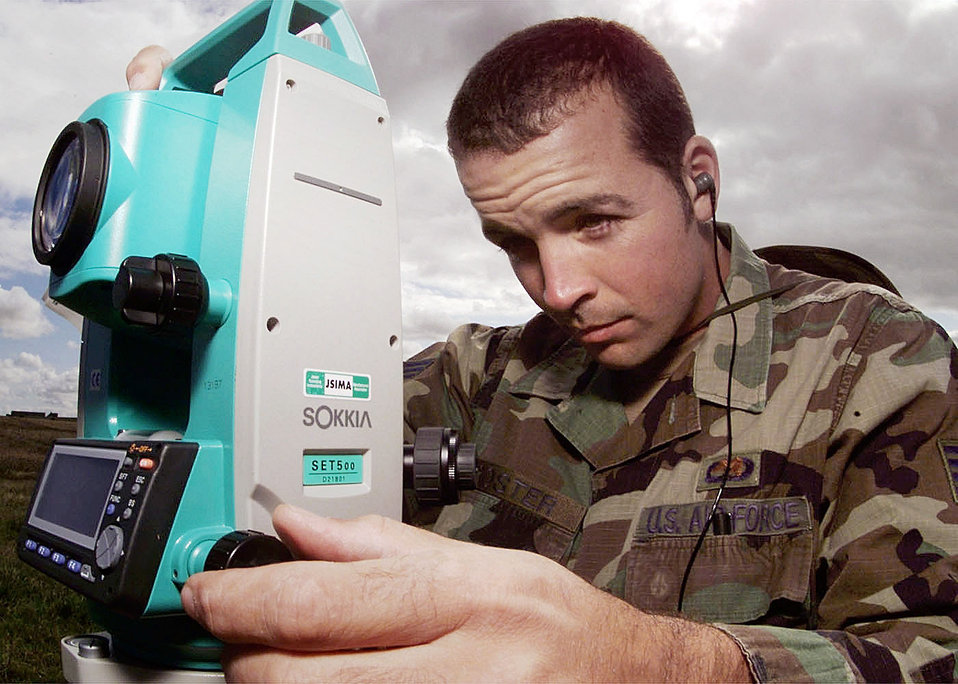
Survey

BOVBJERG, Denmark -- Staff Sgt. Jason Boster, Satellite Communication Technician, 603rd Air Control Squadron, Aviano Air Base, Italy surveys a site for initial setting with a laser range finder on August 23, 2000. The 603rd deployed to Bovbjerg, Denmark in support of an annual Tactical Fighter Weaponry exercise and a NATO Air Meet.